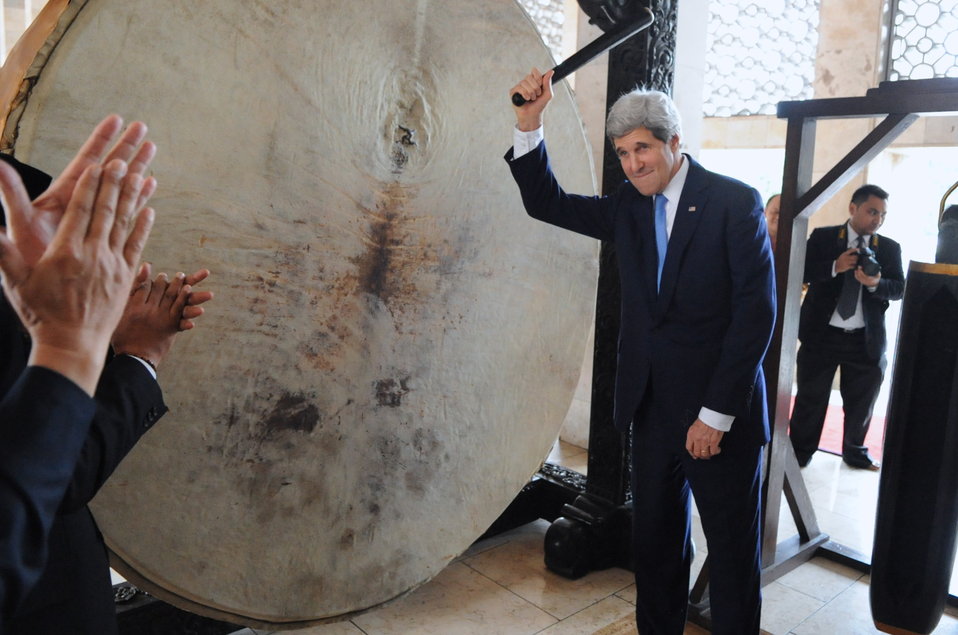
Secretary Kerry Applauded After Banging Gong at Istiqlal Mosque

Leaders of the Istiqlal Mosque in Jakarta, Indonesia, applaud U.S. Secretary of State John Kerry after he banged a traditional gong used to call worshipers to prayer at the Istiqlal Mosque, the largest mosque in Southeast Asia, on February 16, 2014.